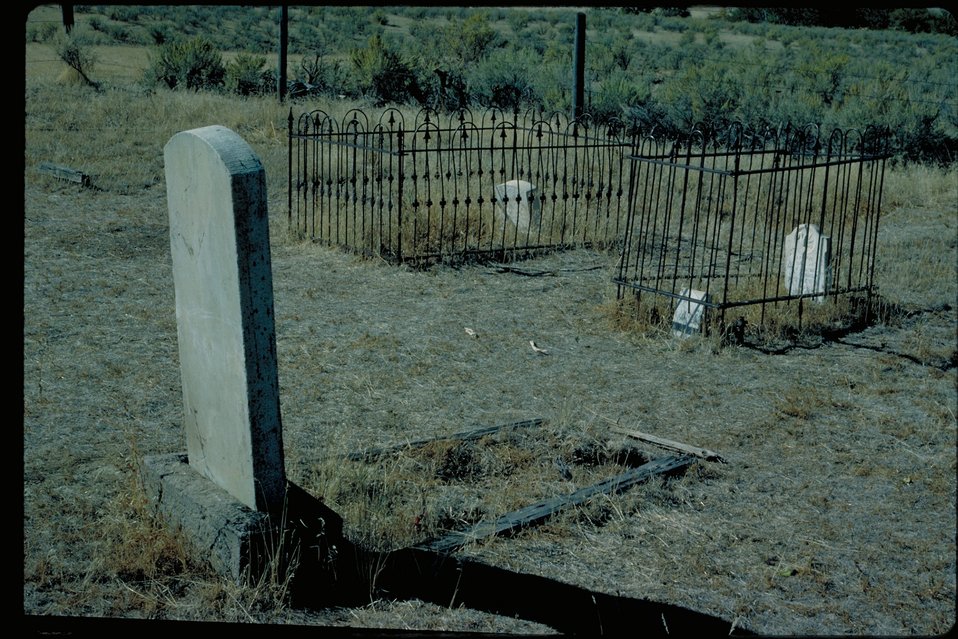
Mayfield Cemetery Grave Oregon Trail Lower Snake River District